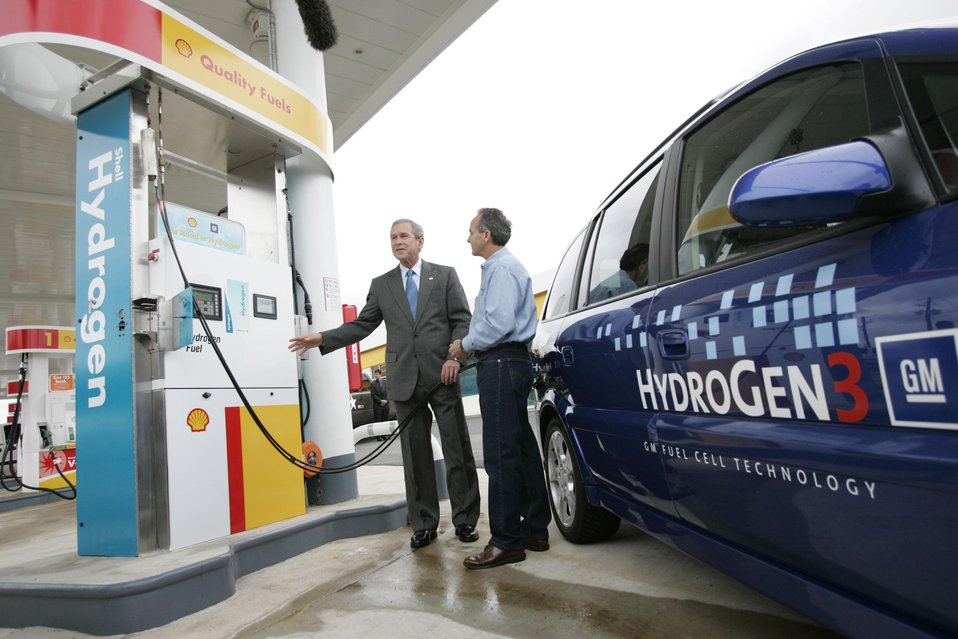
PRESIDENT BUSH AT A WASHINGTON, DC SHELL INTEGRATED GASOLINE/HYDROGEN STATION.

ON MAY 25, 2005 PRESIDENT BUS SPOKE TO THE MEDIA, STANDING WITH RICK SCOTT, OPERATIONS AND SAFETY COORDINATOR, SHELL HYDROGEN, L.L.C. AT WASHINGTON, DC SHELL STATION, THE FIRST INTEGRATED GASOLINE/HYDROGEN IN NORTH AMERICA.